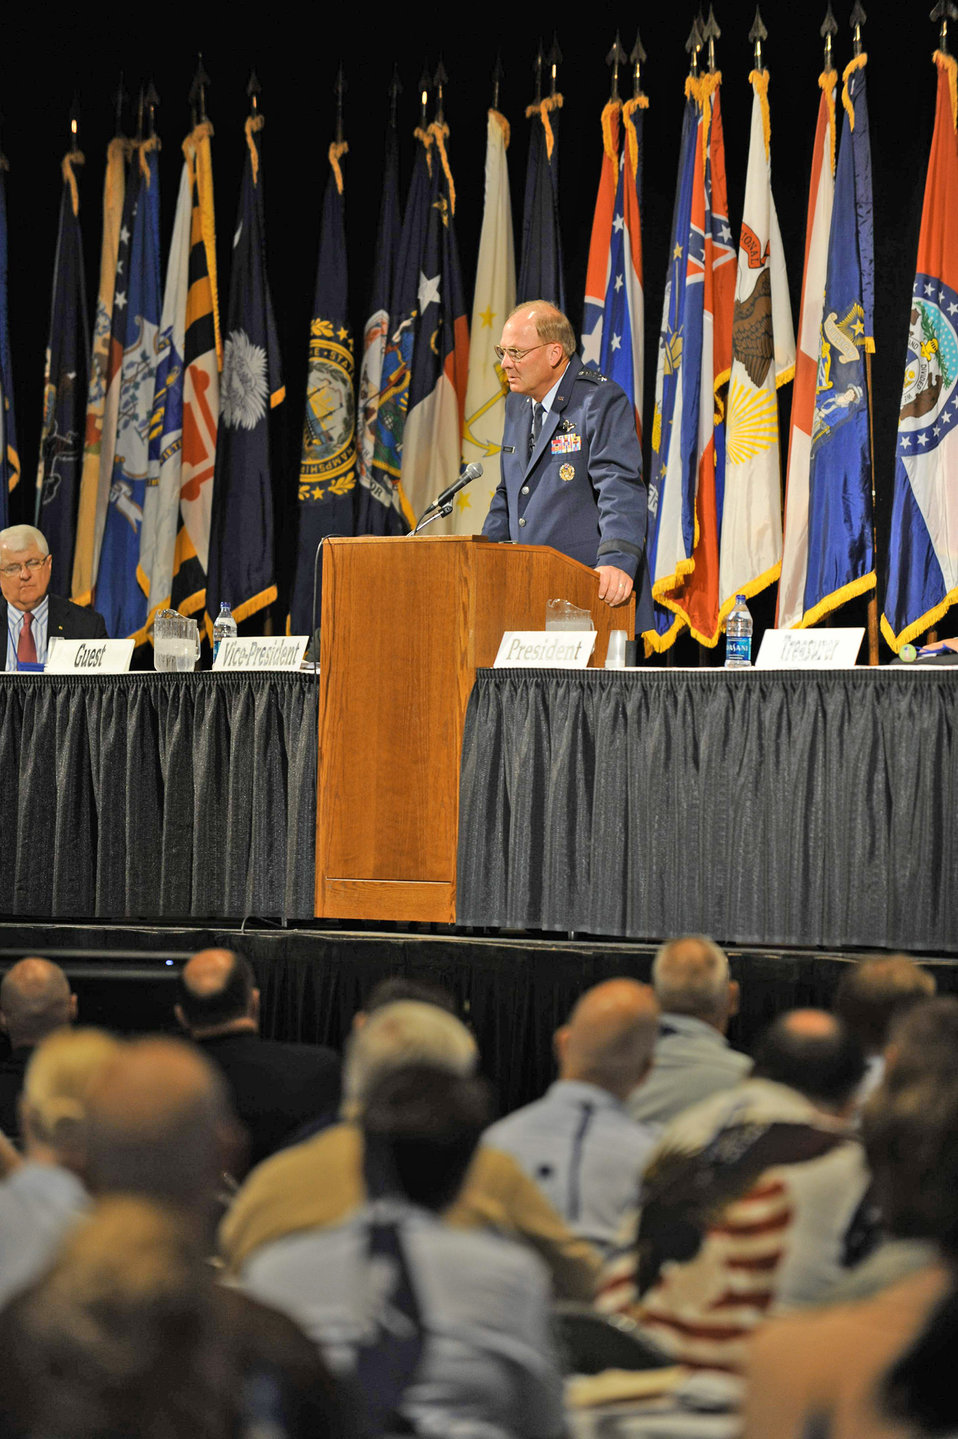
Chief says Guard cannot go back to strategic reserve

Gen. Craig R. McKinley, chief of the National Guard Bureau, speaks at the 38th annual conference of the Enlisted Association of the National Guard of the United States in Rochester, Minn., recently.